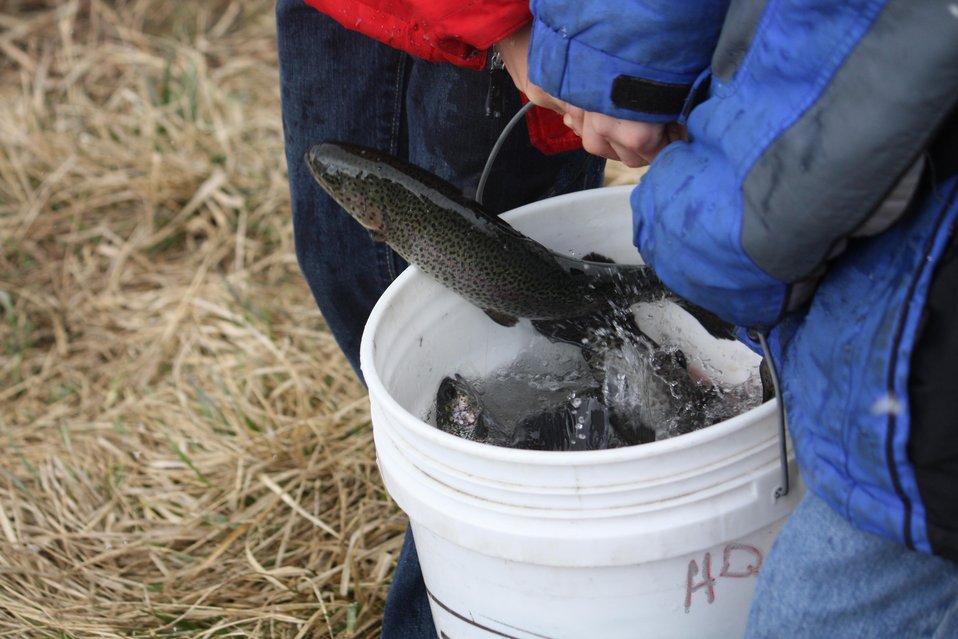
Bucket Jumping

Students work to keep trout a the bucket as they prepare to stock fish in a local pond.

Location: Creston National Fish Hatchery

Credit: Evie Bradley / USFWS

Photo Contest Entry #103